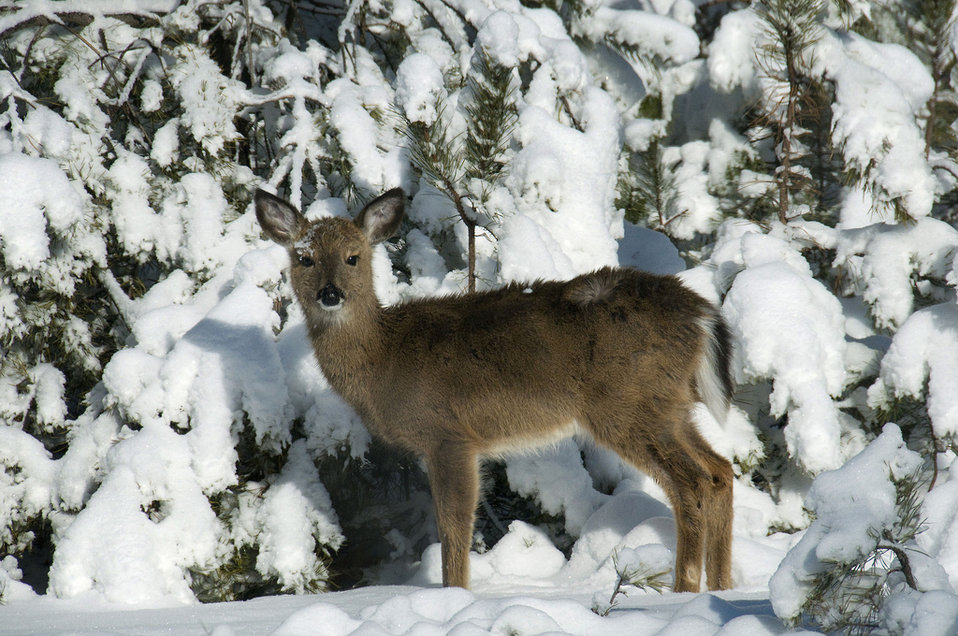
Wildlife at Brookhaven National Laboratory.